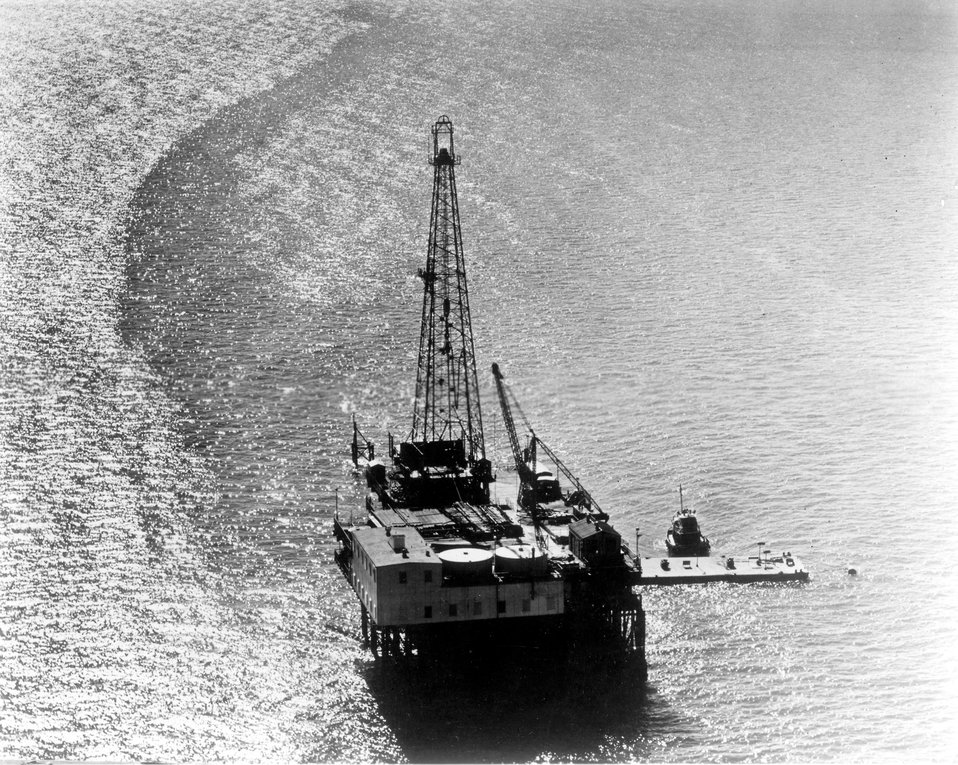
Offshore drilling is the new frontier being explored to meet the increasing demand for petroleum. c. 1970